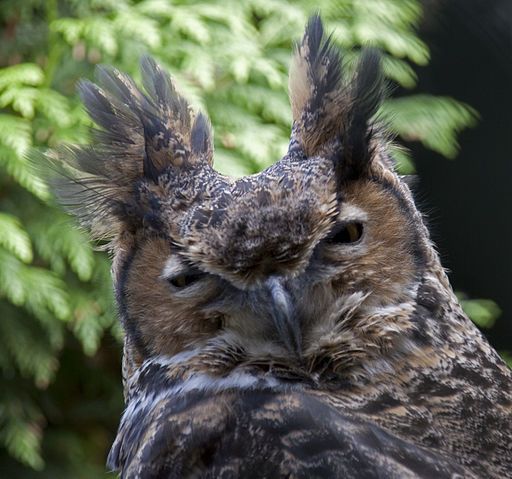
Great horned owl